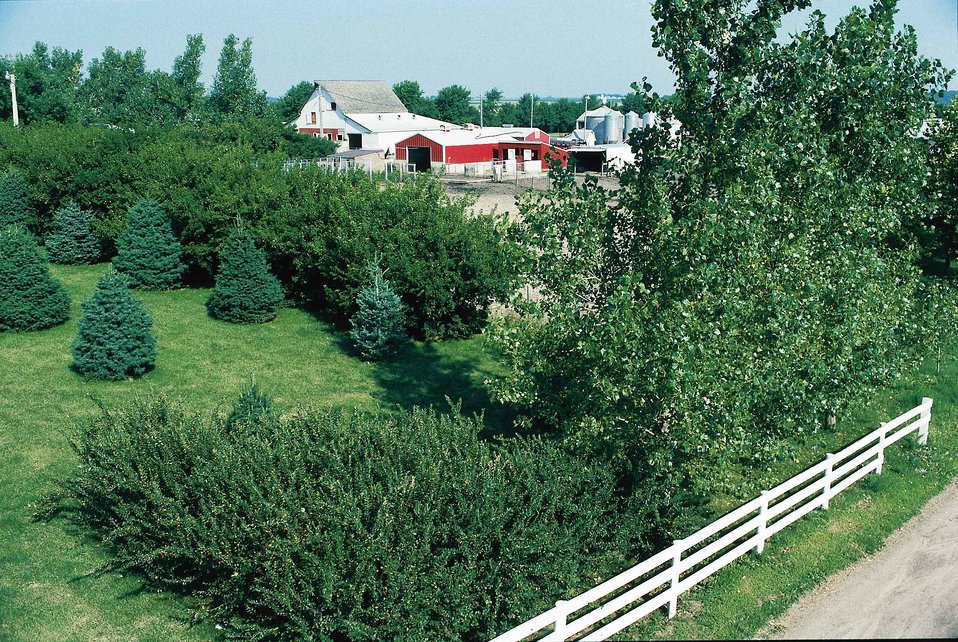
Farmstead windbreak in Pocahontas County, Iowa.